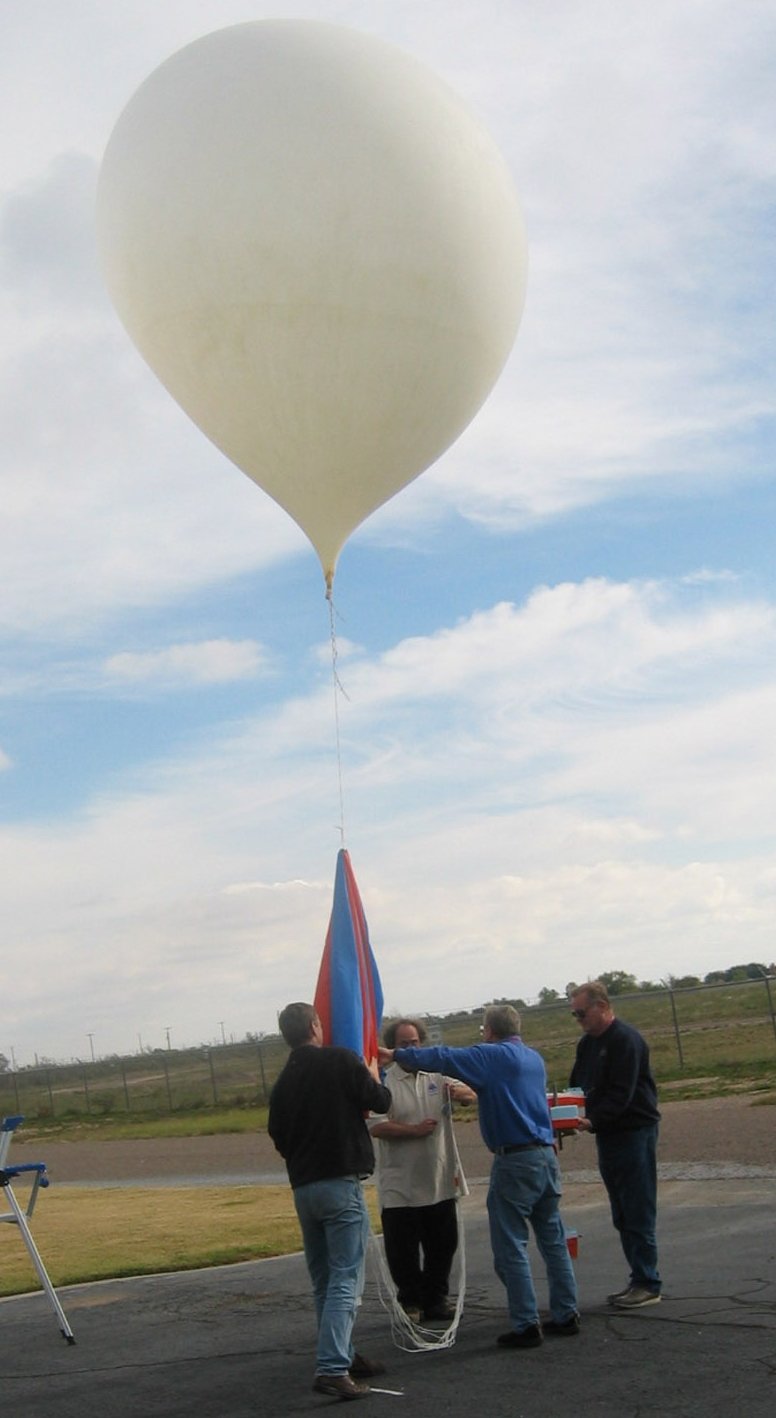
NCAR and NSSL will launch instrumented balloons to measure the pre-storm environment and help refine the V2 forecast/target for each day. They will also measure pre-existing boundaries, and their interactions with the storms, and also storm-environment interactions.